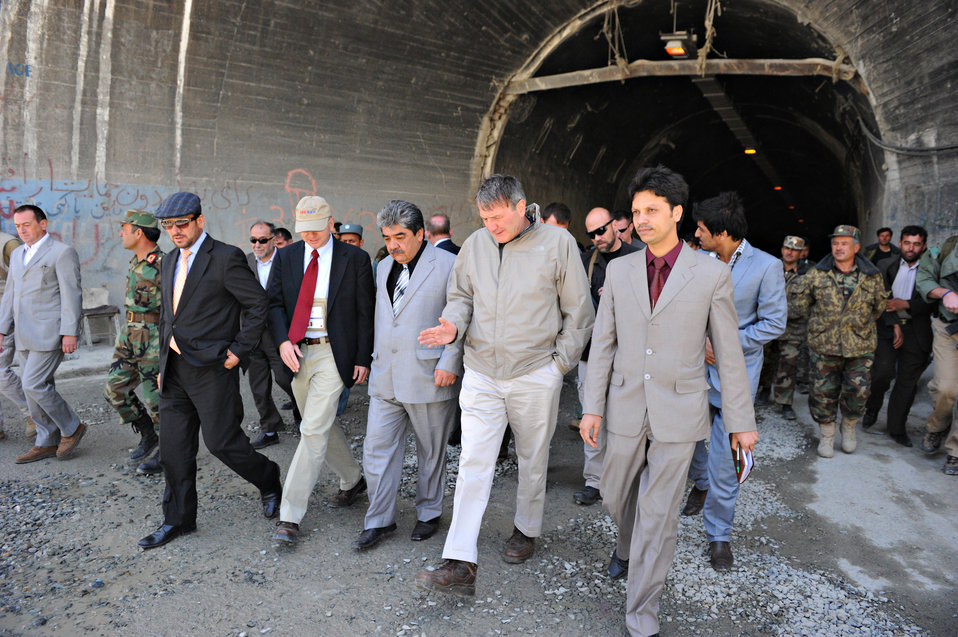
U.S. Ambassador Karl W. Eikenberry attends a ceremony to mark the beginning of renovations at the Salang Tunnel on the border of Parwan and Baghlan Provinces, Afghanistan, on Wednesday, June 15, 2011. (S.K.Vemmer/Department of State)